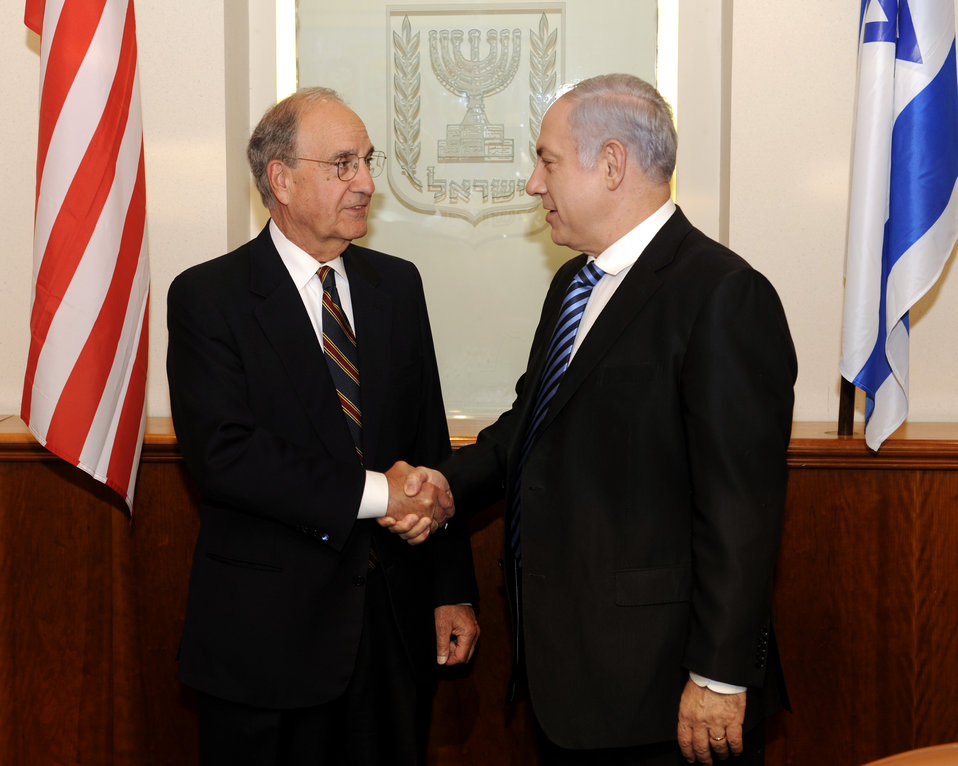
Israeli Prime Minister Netanyahu and Special Envoy Mitchell Shake Hands

Israeli Prime Minister Benjamin Netanyahu and U.S. Special Envoy for Middle East Peace George Mitchell shake hands at the Prime Minister's office in Jerusalem on July 18, 2010.